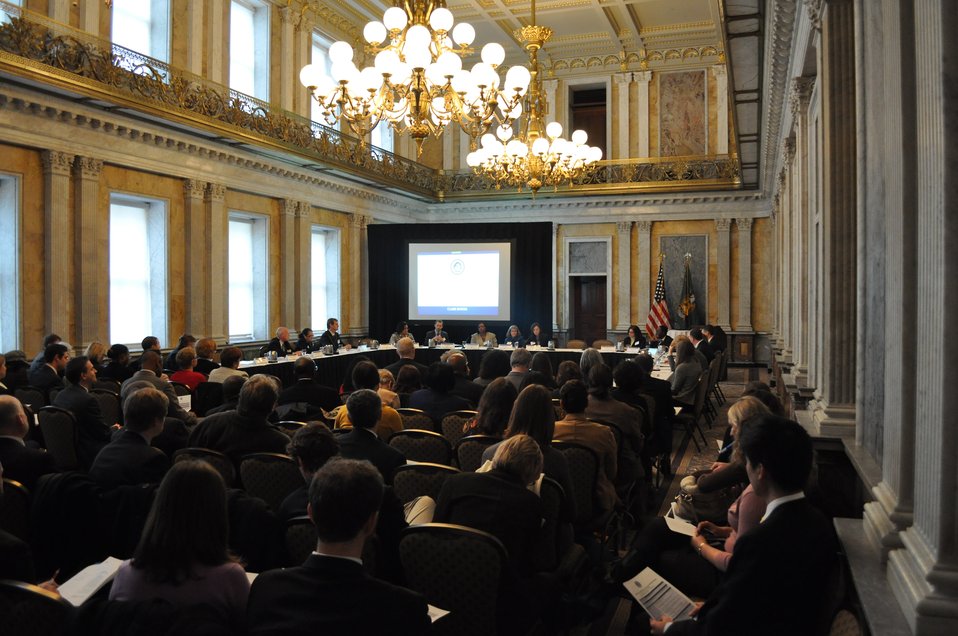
Financial Literacy and Education Commission, 01/26/2011

The FLEC is composed of representatives from 22 federal agencies and entities and coordinates financial literacy and education policies across the federal government.